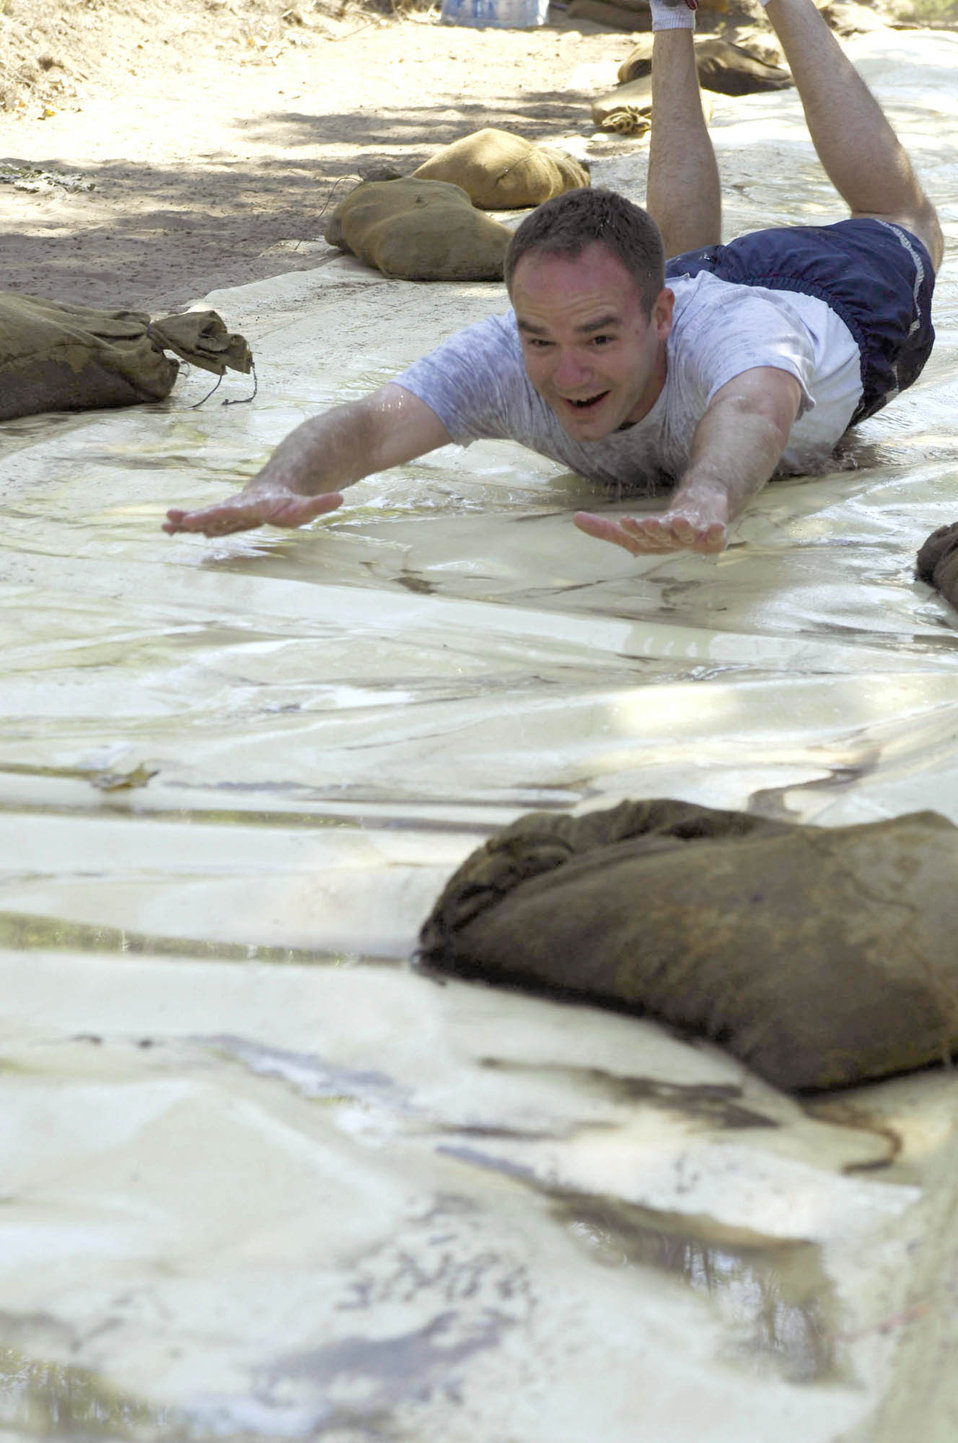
Kyrgystan 5K Mud Run

Capt. Carl McBurnett makes a second pass on the slip 'n slide obstacle during the 5K mud run at the Transit Center at Manas, Kyrgyzstan, July 11, 2010. Airmen took part in the course to help raise money for charity.